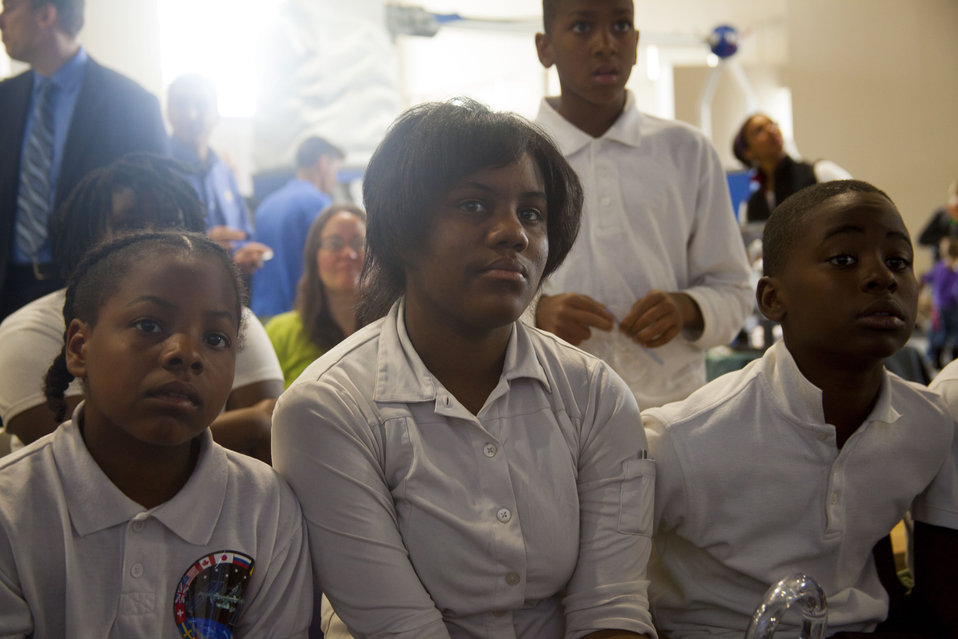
Middle School Students Participate in a Virtual Field Trip to Mars

Kramer Middle School students participate in a virtual field trip to Mars through a Google Hangout with NASA subject matter experts and the U.S. Department of State at the USA Science and Engineering Festival (USASEF) in celebration of National Science Week in Washington, D.C., on April 25, 2014.